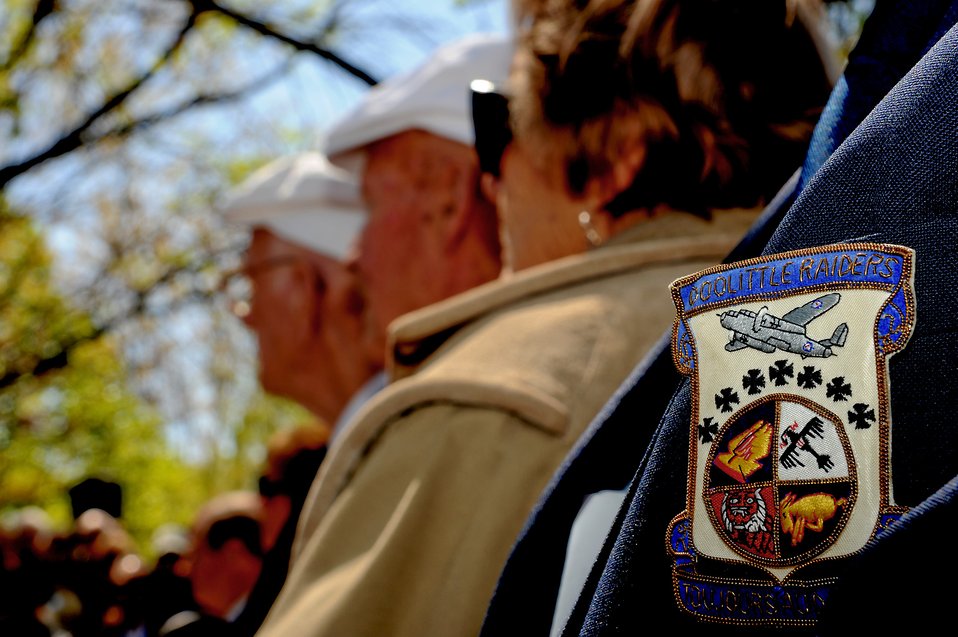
Doolittle Raiders Memorial Service

Three of the eight remaining Doolittle Tokyo Raiders attend a memorial service held to honor all the Raiders during their 68th reunion held at the National Museum of the United States Air Force, Wright-Patterson Air Force Base, Ohio, April 18th, 2010. The Doolittle Raiders' 68th reunion commemorates the anniversary of the April 18th, 1942 Doolittle Raid on Tokyo, when U.S. Army Air Forces Lt. Col. Jimmy Doolittle's squad of 16 B-25s bombed targets in response to the Japanese attack on Pearl Harbor.